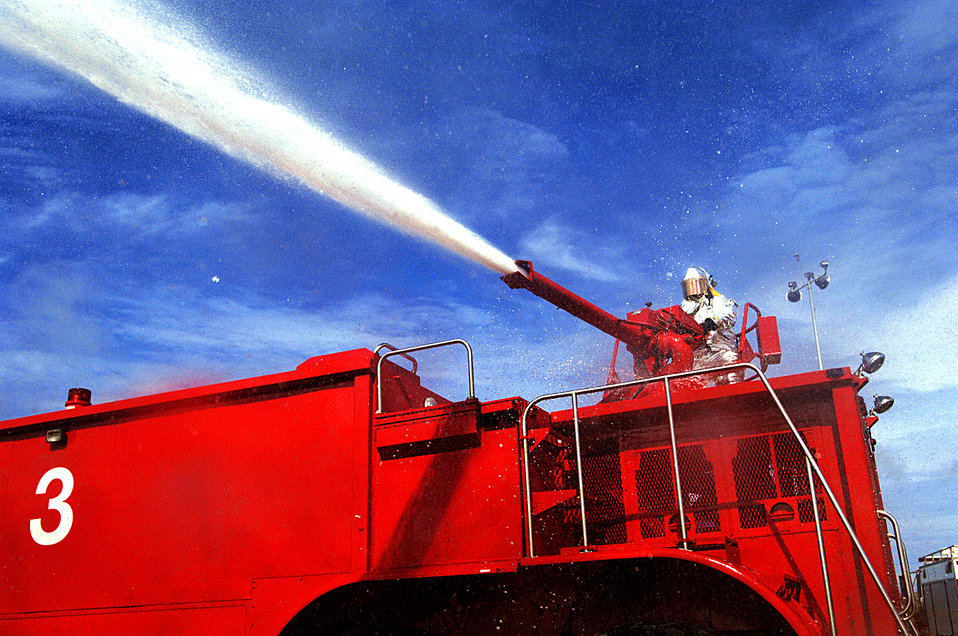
'Beverly' visits Guam

ANDERSEN AIR FORCE BASE, Guam -- Firefighters with the 36th Civil Engineer Squadron work to put out a fire as part of a simulated aircraft crash during Exercise Beverly Palm 05-07. The routine exercise is held several times a year to sharpen the mobility and wartime capabilities of participating servicemembers.